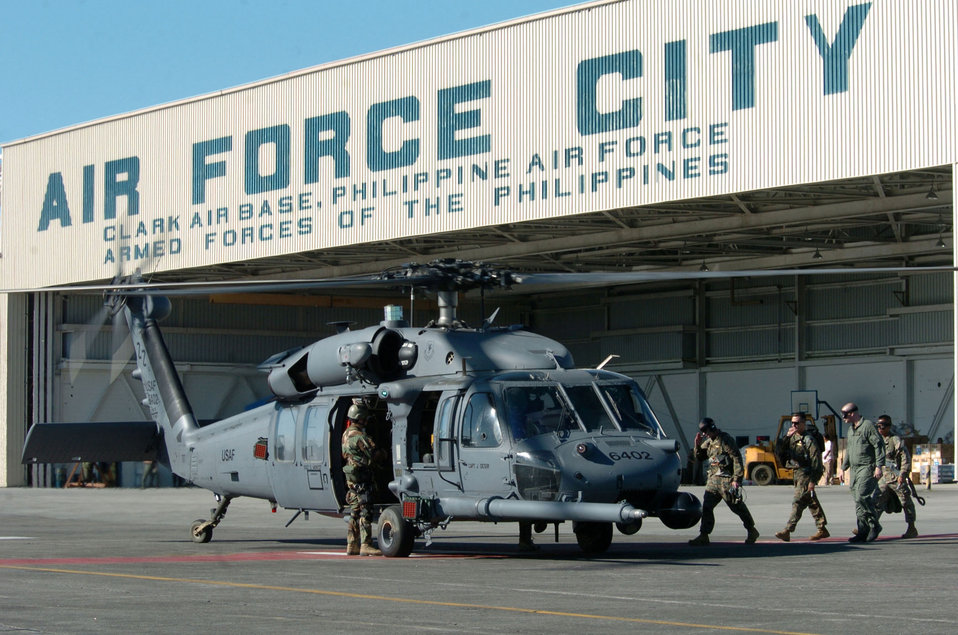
Kadena Airmen aid Philippine typhoon victims

CLARK AIRFIELD, Philippines -- Airmen board an HH-60 Pave Hawk helicopter from the 33rd Rescue Squadron at Kadena Air Base, Japan. U.S. military troops are providing humanitarian assistance and disaster relief to residents of Quezon Province, where widespread flooding displaced about 168,000 people and left more than 1,400 dead or missing. Air Force and Marine helicopters are flying daily missions to the stricken areas.